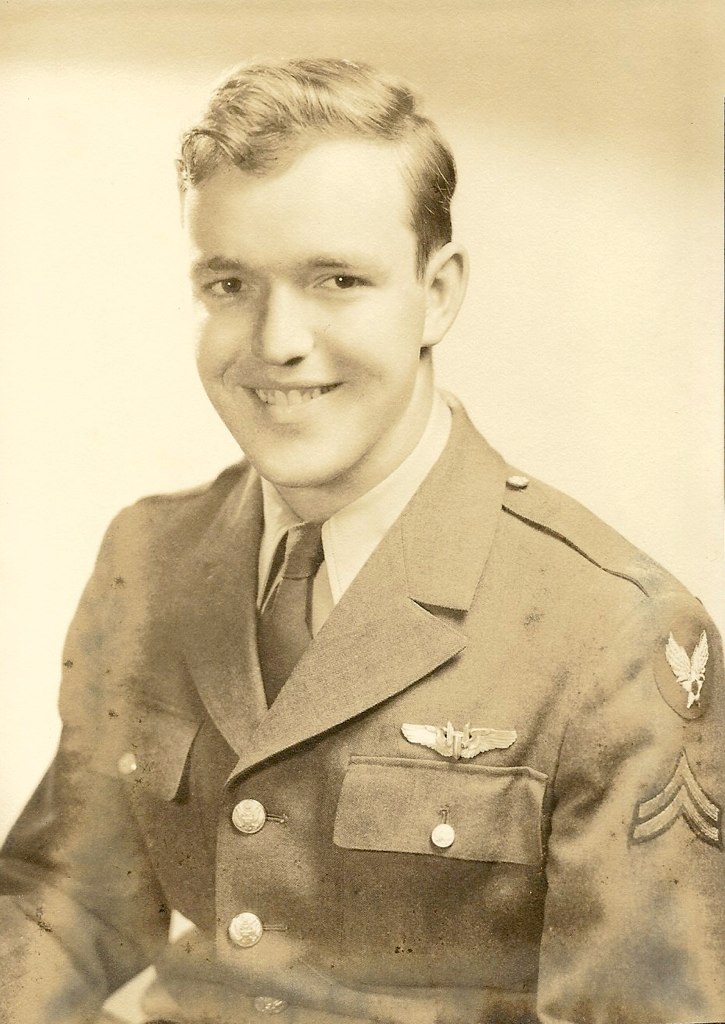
UK's 'Friendly Invasion' 70 years on

Tech. Sgt. Robert Leidenfrost was a bombardier with the 560th Squadron under the 388th Bombardment Group during World War II. The 388th BG memorial, which was re-dedicated at Coney Weston, England, July 14, 2012, is dedicated to the Airmen who lost their lives while serving in the 388th BG at Knettishall Airfield.